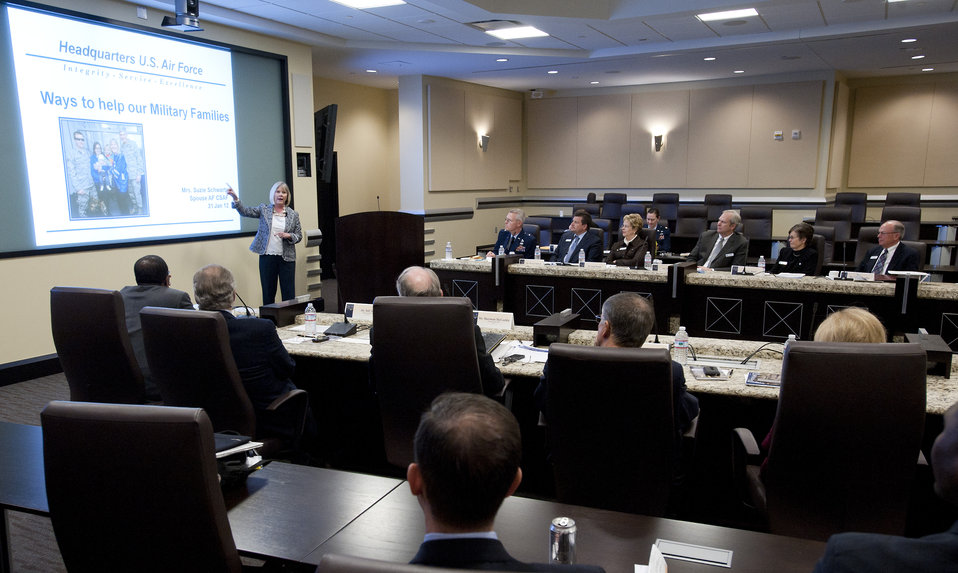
AF leaders talk to U.S. civic leaders

Suzie Schwartz, the wife of Air Force Chief of Staff Gen. Norton Schwartz, speaks with civic leaders during a conference Jan. 31, 2012, at Joint Base Andrews, Md. She talked to the leaders, who represent communities from across the U.S., about the ways local communities can help military families.